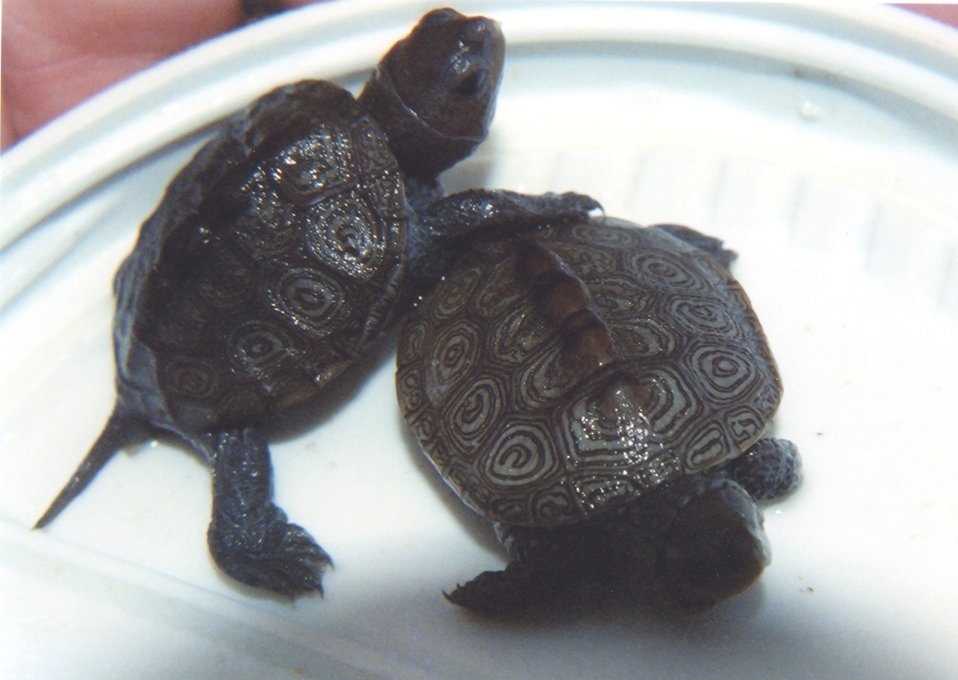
Diamondback terrapin hatchlings.